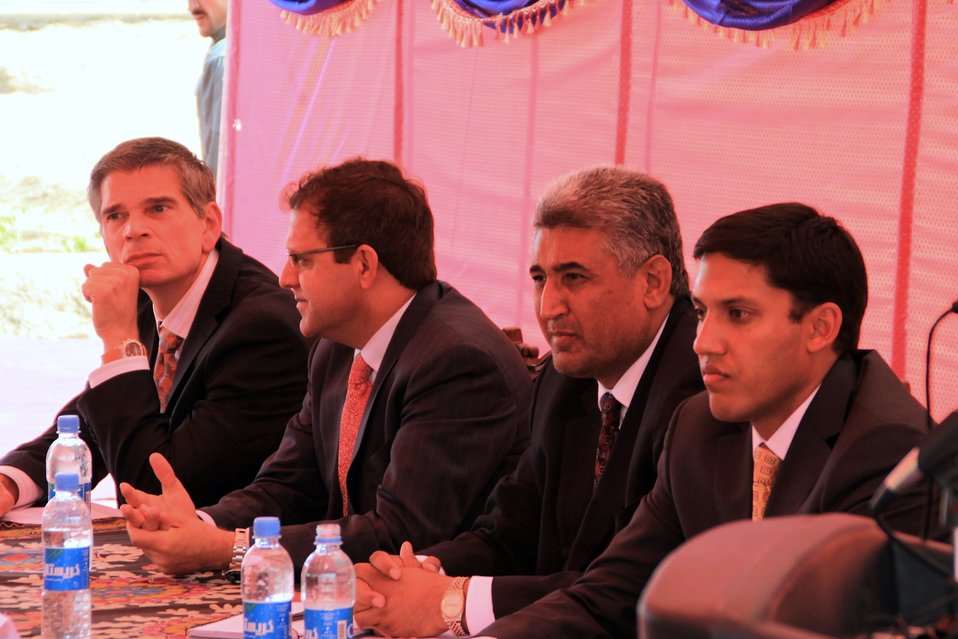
Badam Bagh Farm